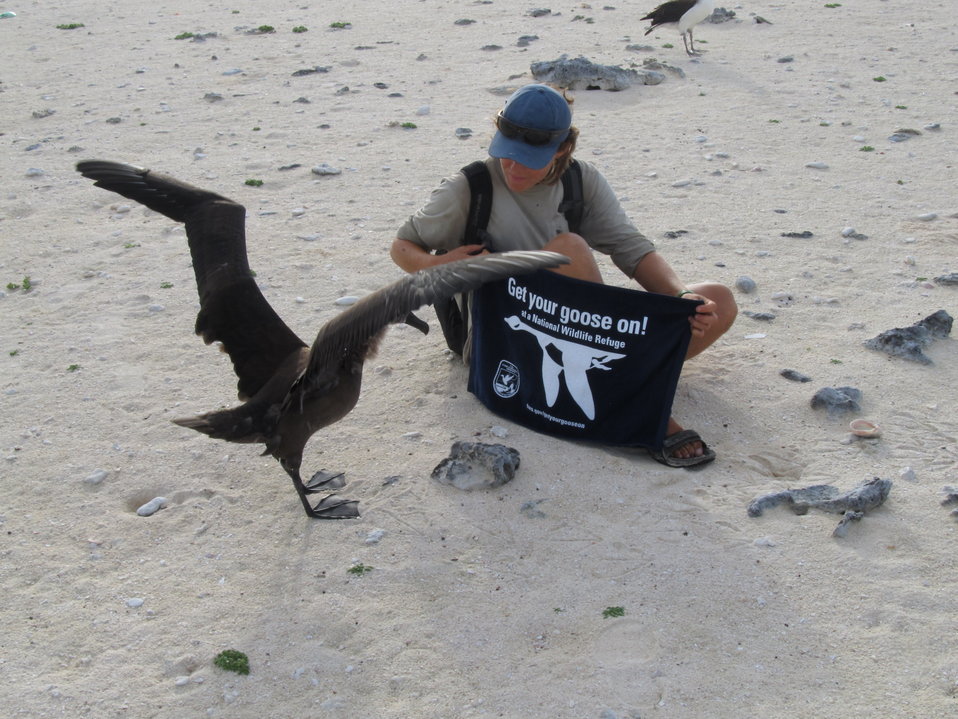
Get Your Goose On! - Albatross Style

Photo taken at Laysan Island in the Papahanaumokuakea Marine National Monument, Hawaiian Islands National Wildlife Refuge. Laysan is located approximately 800 miles northwest of Honolulu, Hawaii and is a remote field camp staffed year round for habitat restoration and population monitoring.